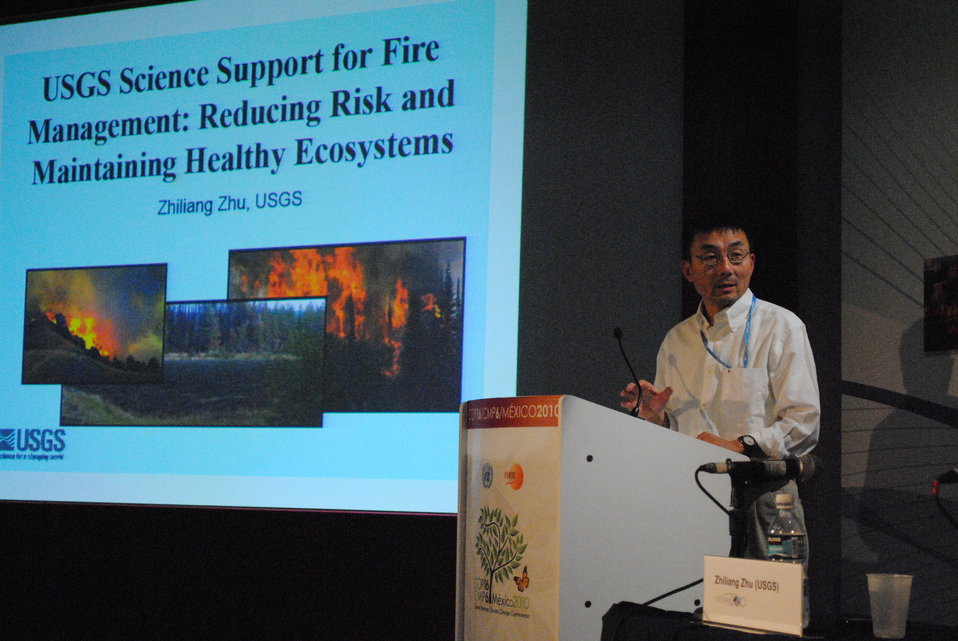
Zhiliang Zhu of USGS Explains the Impact of Fires

Zhiliang Zhu of the U.S. Geological Survey explains the impact of fires at a side event at the U.S. Center at COP-16 in Cancun, Mexico, on December 2, 2010.